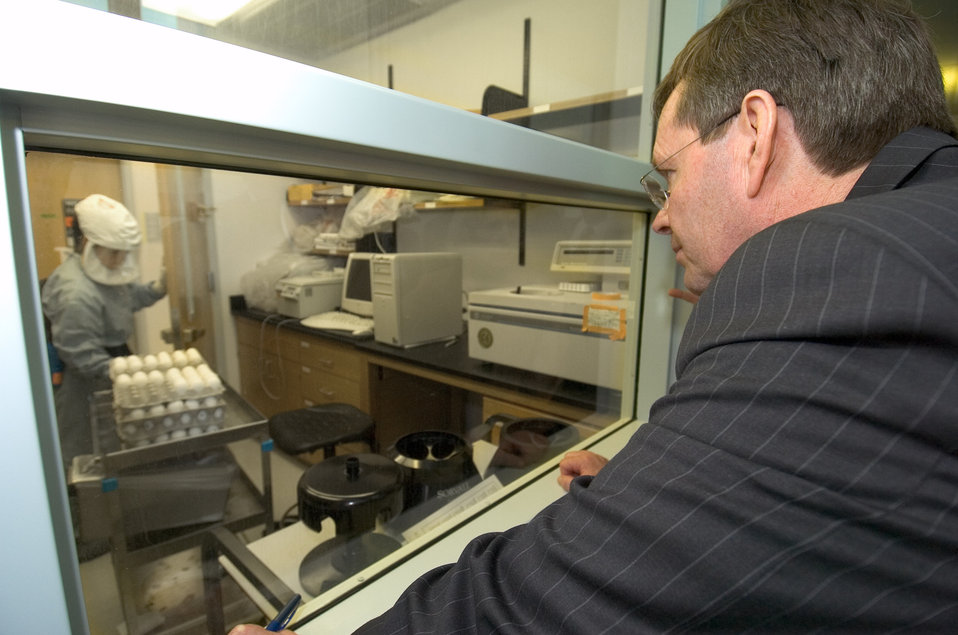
This 2005 photograph showed Michael O. Leavitt, the Secretary of Health and Human Services, as he was observing CDC personnel as they were working in a maximum containment laboratory.